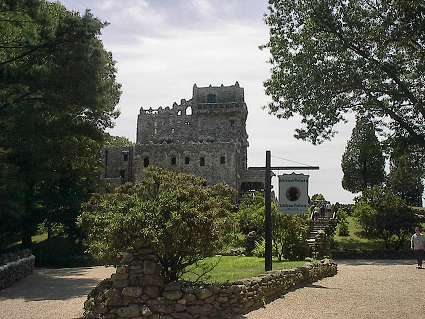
03 gilette longview